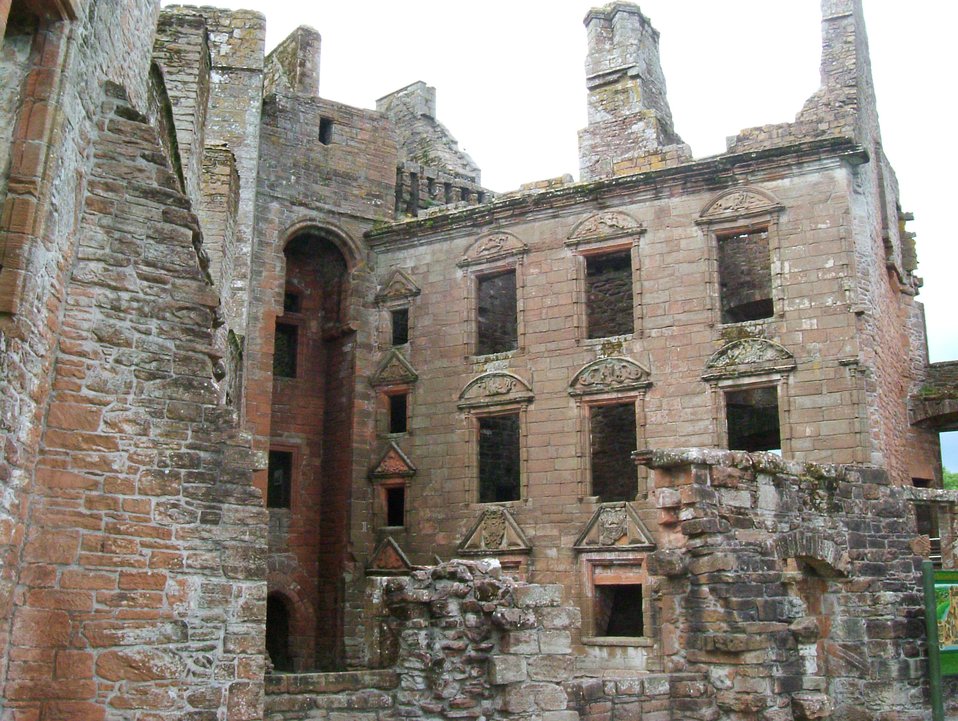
Deutsch: Caerlaverock Castle, Haupthaus – Nithsdale Lodging